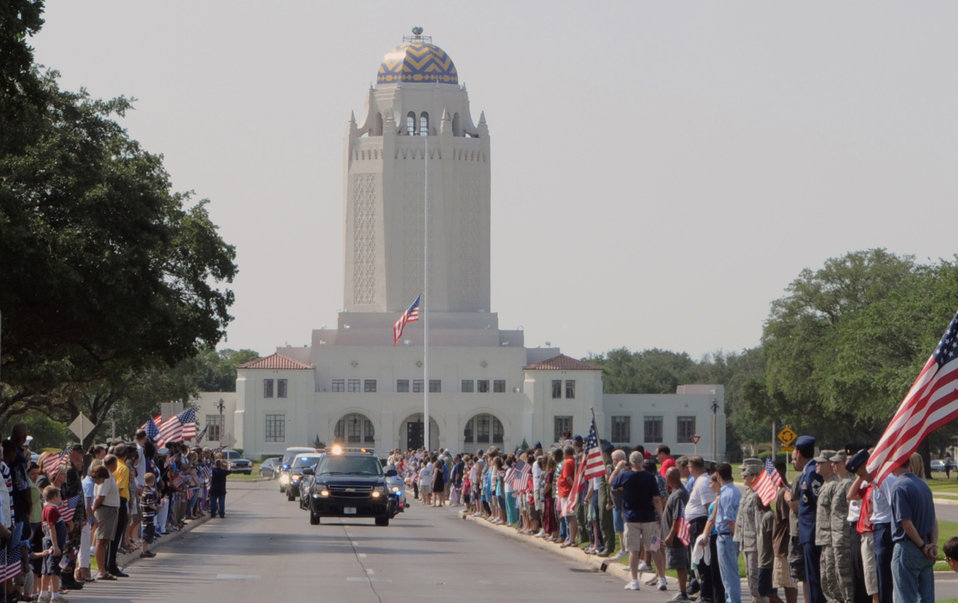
Hundreds show for fallen Marine's return home

The motorcade carrying the casket of Marine Corps Lance Cpl. Brandon Lara enters Harmon Drive July 26 at Randolph Air Force Base, Texas.